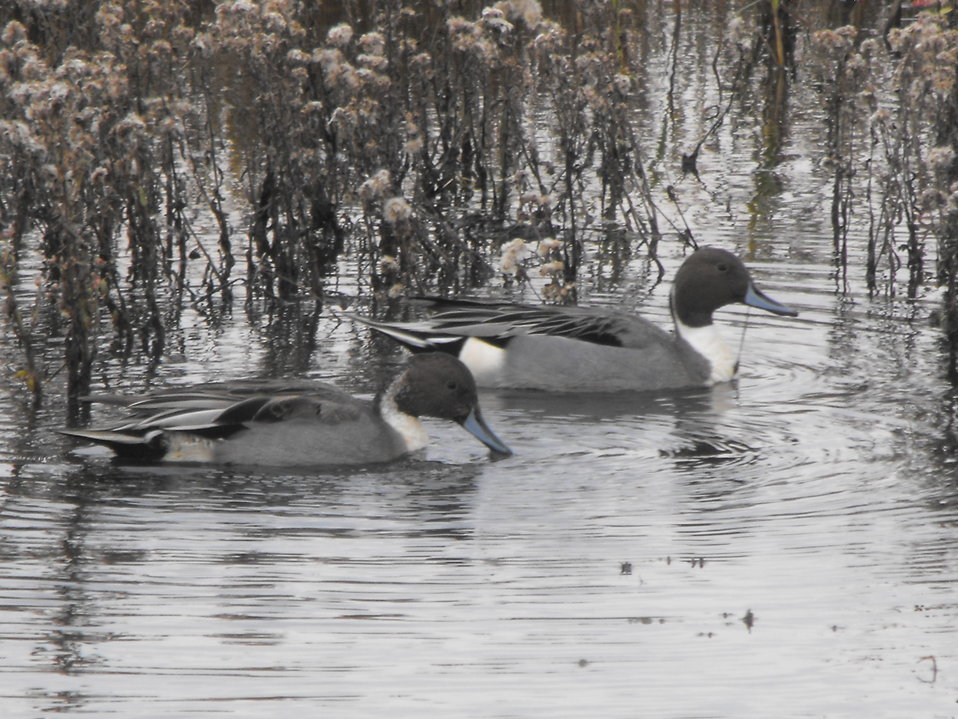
Pintails in Snow Goose Pool, Wildlife Loop at Chincoteague National Wildlife Refuge.